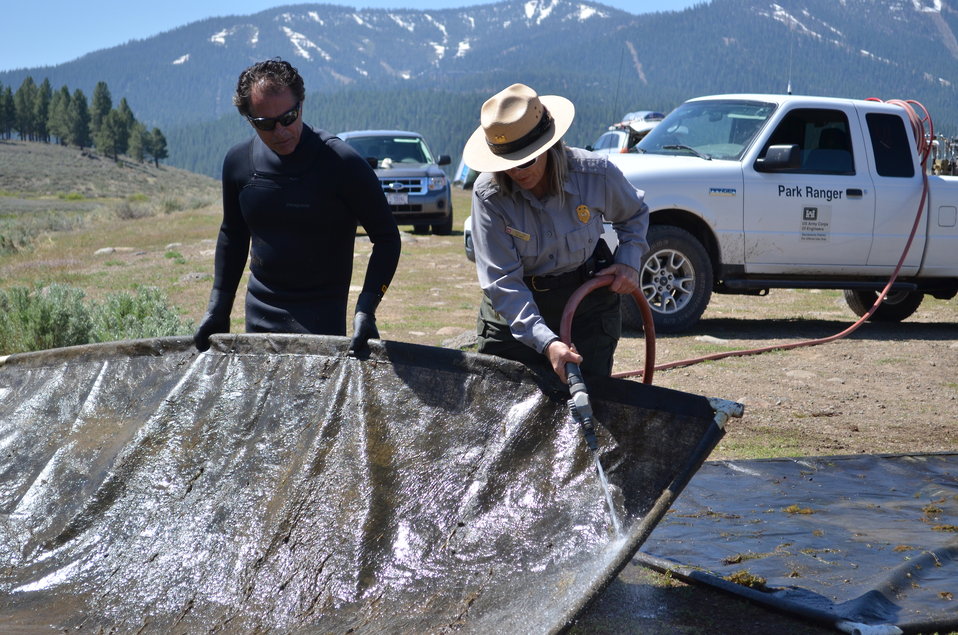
Corps fights invasive weeds at Martis Creek Lake

Sacramento District park ranger, Jacqui Zink (right), and Tahoe Divers Conservancy director, Phil Caterino, clean a weed barrier from Martis Creek Lake in Truckee, Calif., during a removal, cleaning and replacement project May 19, 2012. The gas-permeable barriers kill invasive plants by blocking sunlight, but don't disturb other plant and animal species. The U.S. Army Corps of Engineers and Tahoe Divers Conservancy have teamed up to sustainably eradicate invasive milfoil at the lake, managed by the Corps’ Sacramento District.